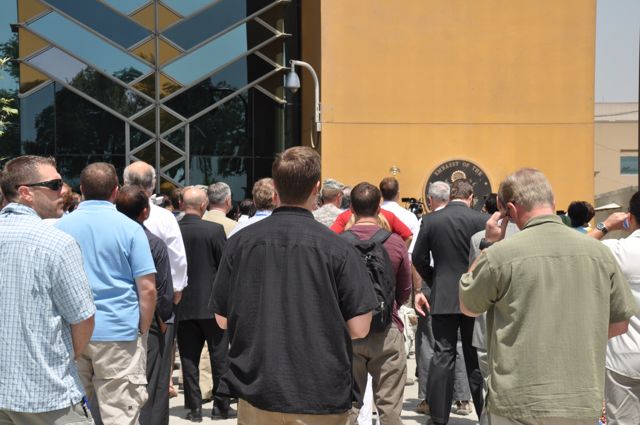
Memorial Day at US Embassy in Kabul